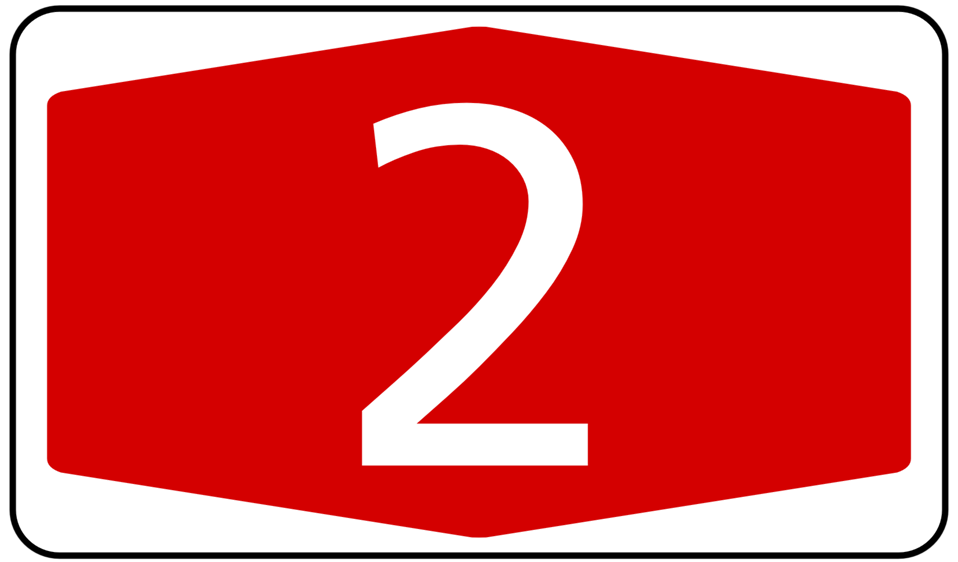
sxildo de svisa auxtovojo